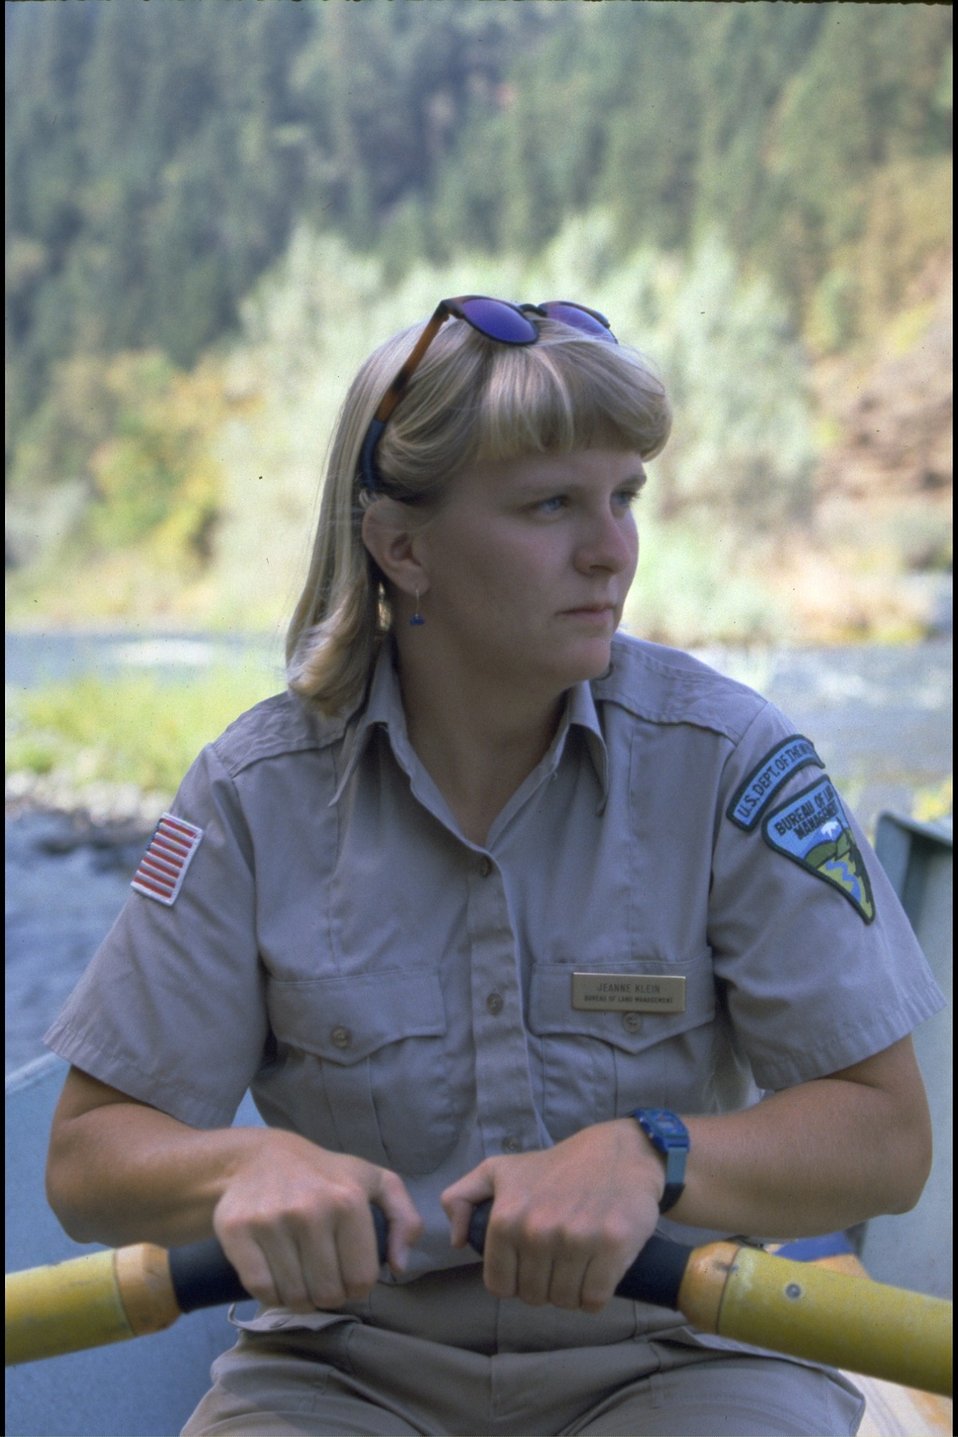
Jeanne Klein, BLM river staff, rowing on Rogue River.